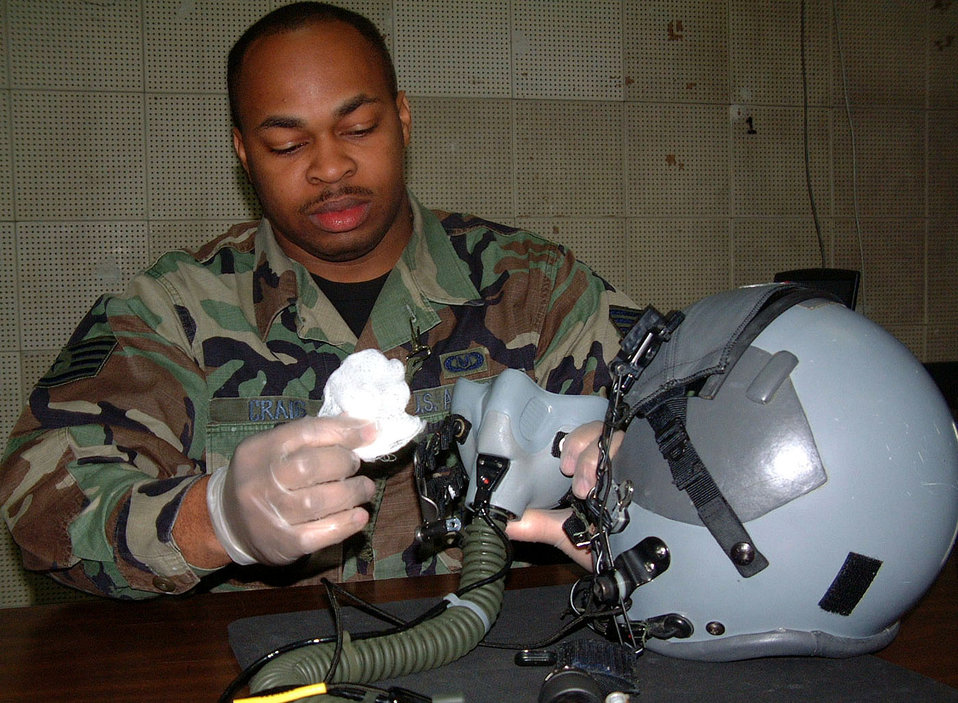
Life support

TAEGU AIR BASE, South Korea -- Staff Sgt. Christopher Craig cleans an oxygen mask. He is deployed here from the 353rd Special Operations Group life support section at Kadena Air Base, Japan. Life support airmen maintain all life-sustaining gear used by aircrews including chemical and biological protection suits, helmets and night-vision goggles.